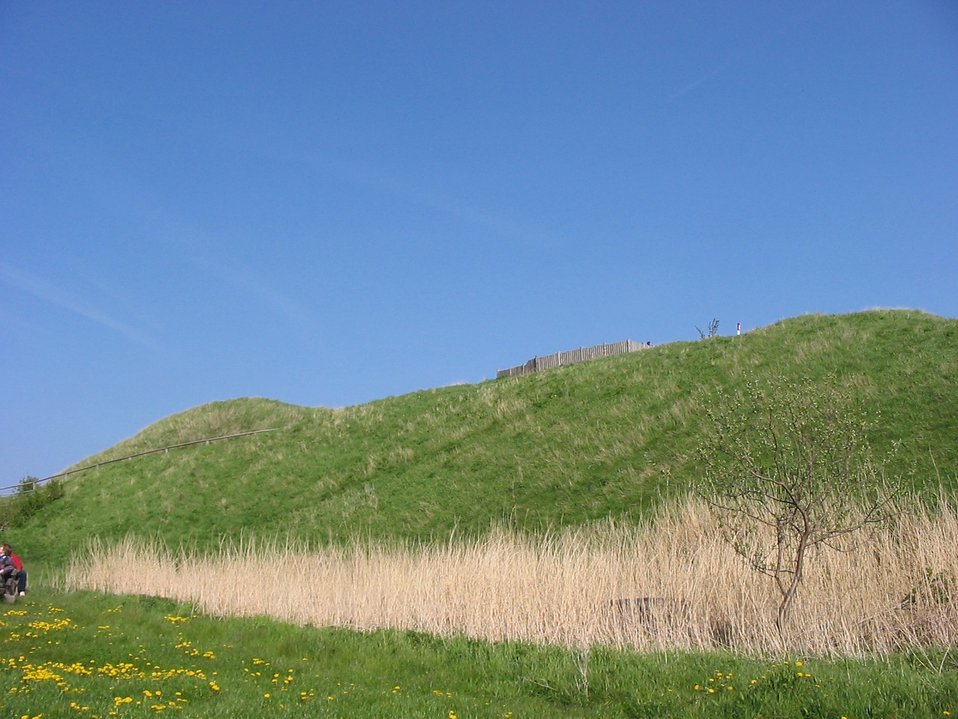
Jaromarsburg4